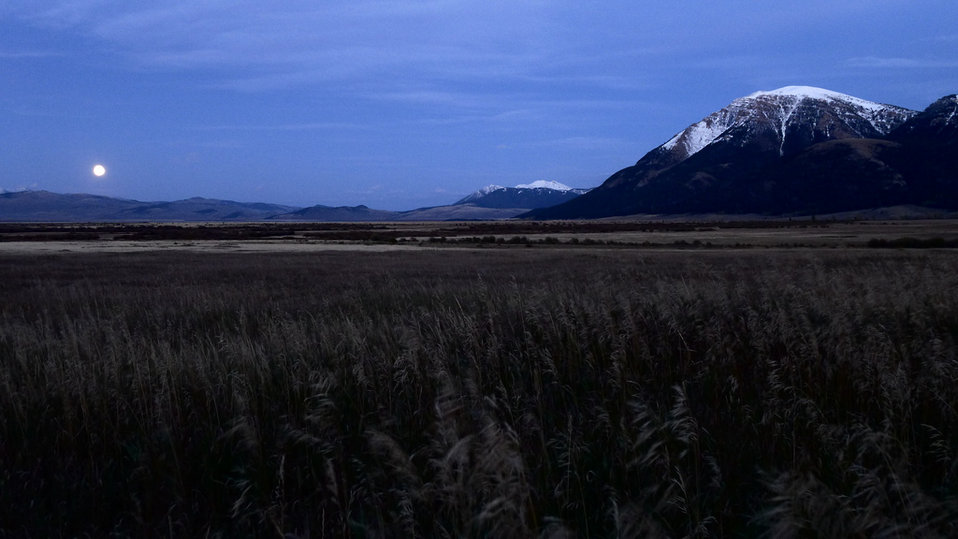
moonrise near Sheep Mountain

Red Rock Lakes National Wildlife Refuge, MT